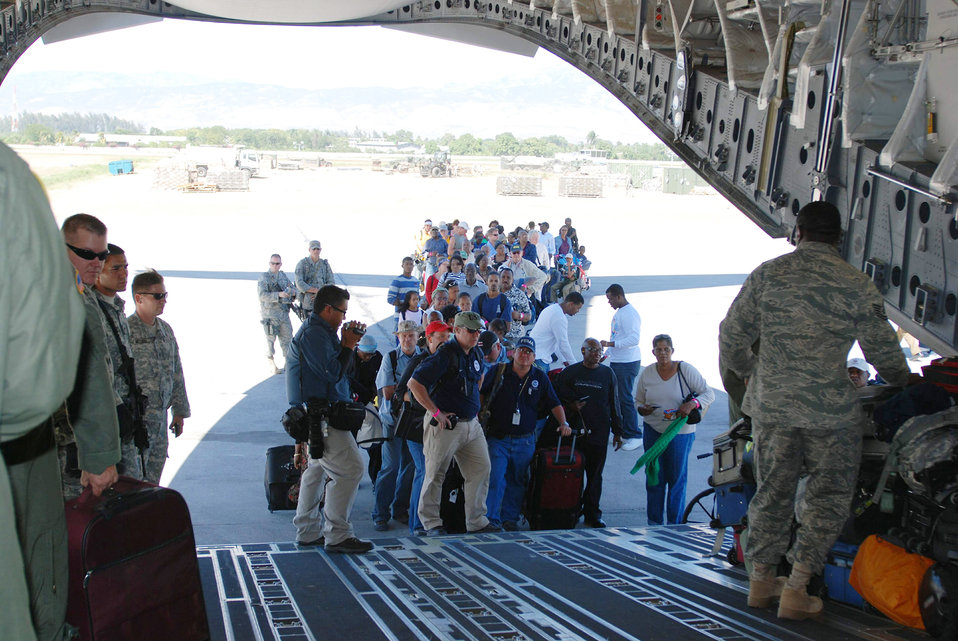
March C-17 crew completes mission to Haiti

Aid workers and evacuees with U.S. passports and visas wait in line to board a C-17 Globemaster III from March Air Reserve Base, Calif., Jan. 29, 2010, in Port-au-Prince, Haiti. The C-17 flew three missions as part of Operation Unified Response into Haiti, before returning to March ARB Feb. 1.